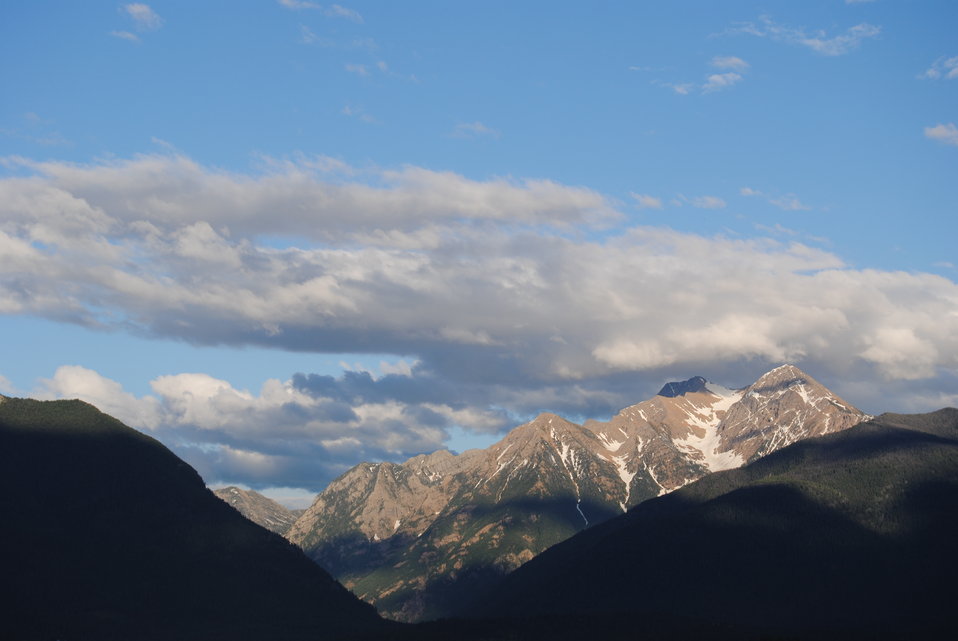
Week 5, Kicking Horse Reservoir, Fencing Project, Ronan, MT

Just one of many spectacular views the workers enjoyed while removing the barbed wire.